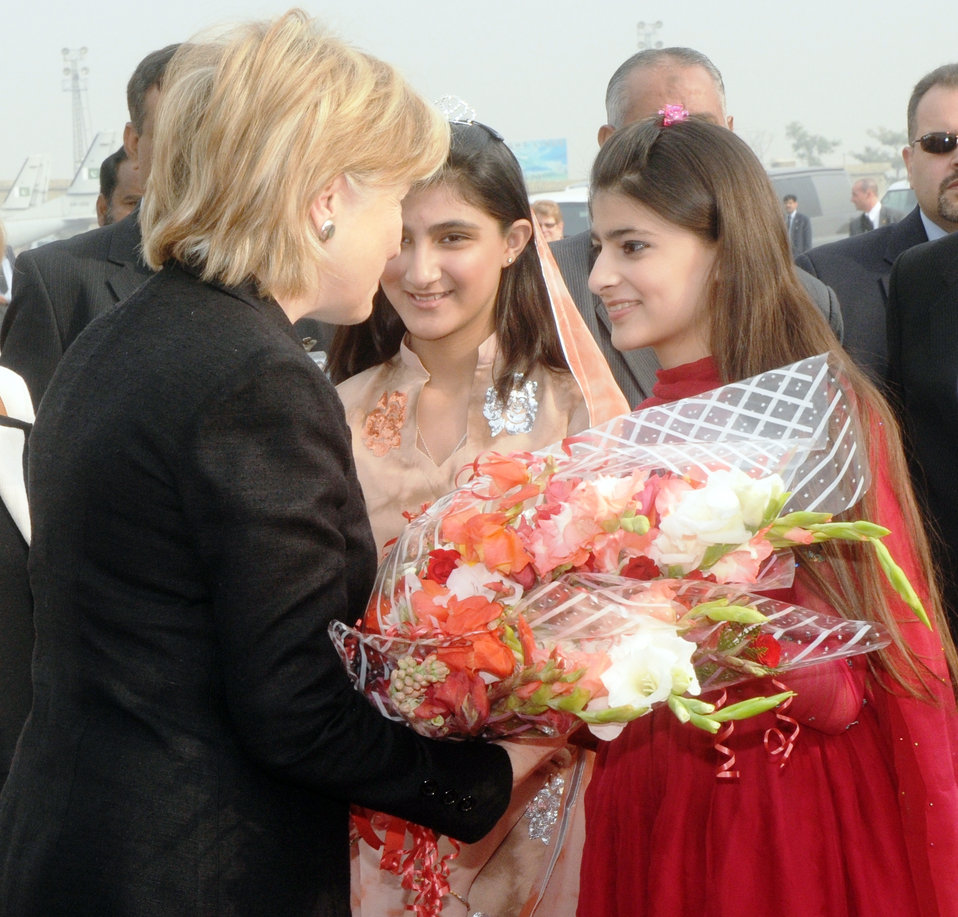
Secretary Clinton Arrives in Pakistan

U.S. Secretary of State Hillary Rodham Clinton is greeted by girls attired in Pakistani national dress presenting bouquets upon her arrival to Islamabad, Pakistan October 28, 2009.